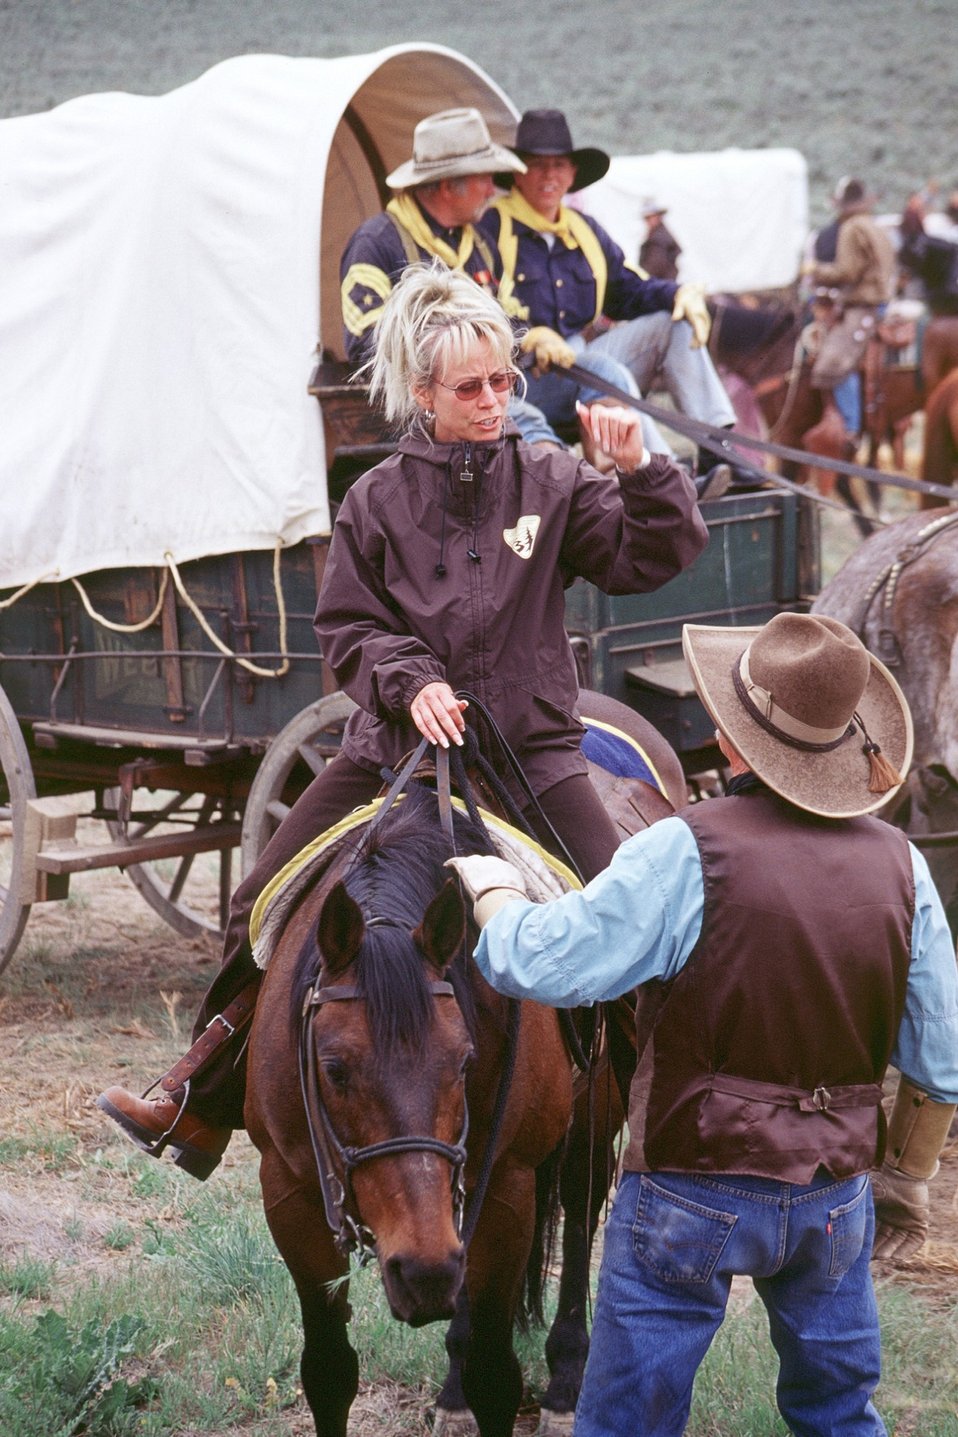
NHOTIC 10th Anniversary, wagon train reenactment. Covered wagons and pioneers on Oregon Trail (NHOTIC Director, Gay Ernst, on horseback).